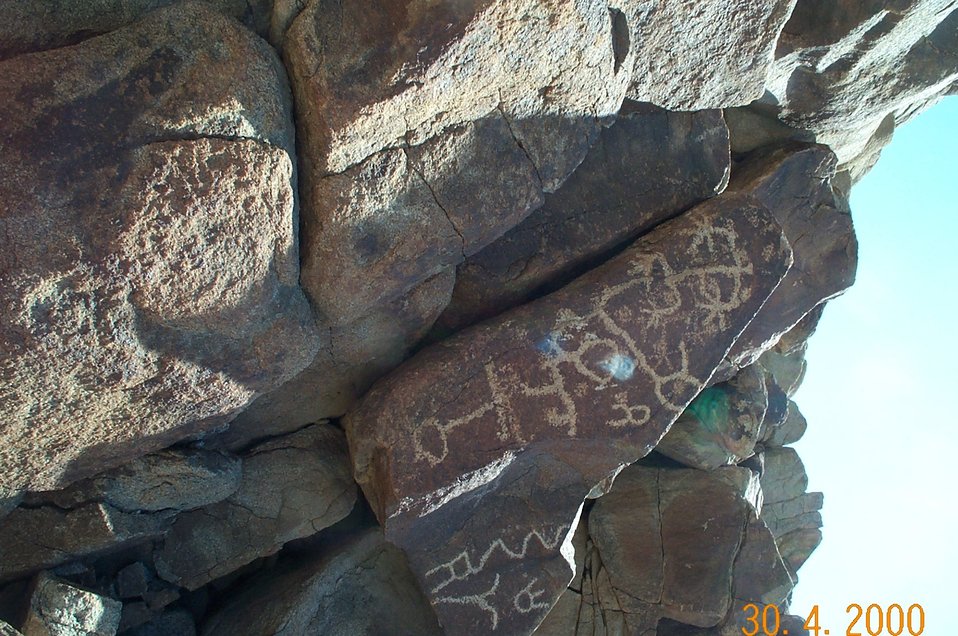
Rock art